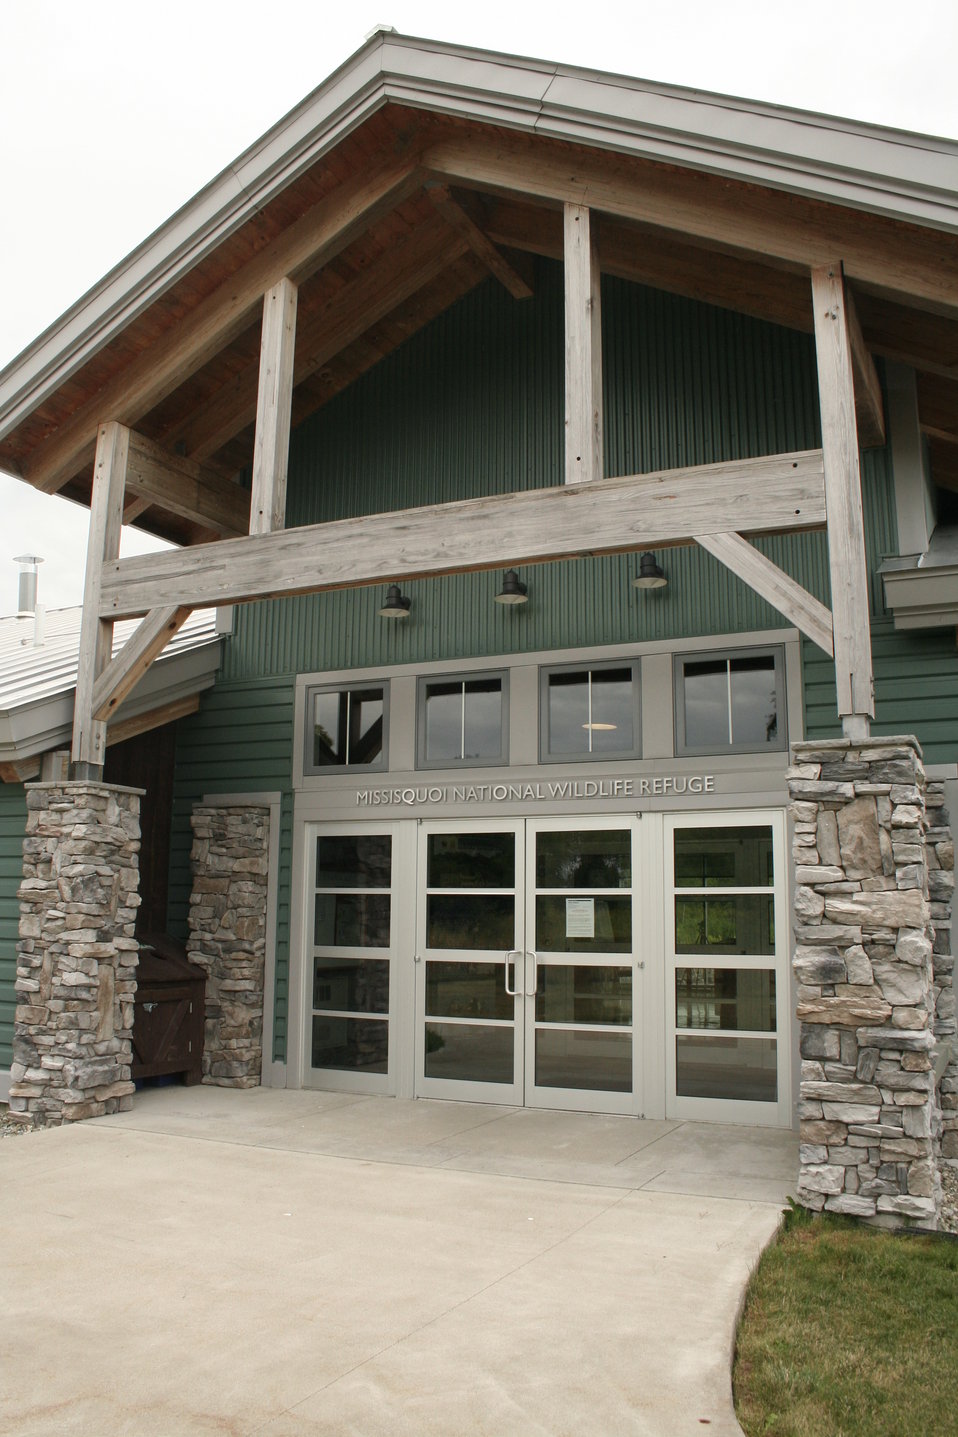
Missisquoi NWR Visitor Center

Missisquoi National Wildlife Refuge Visitor Center.